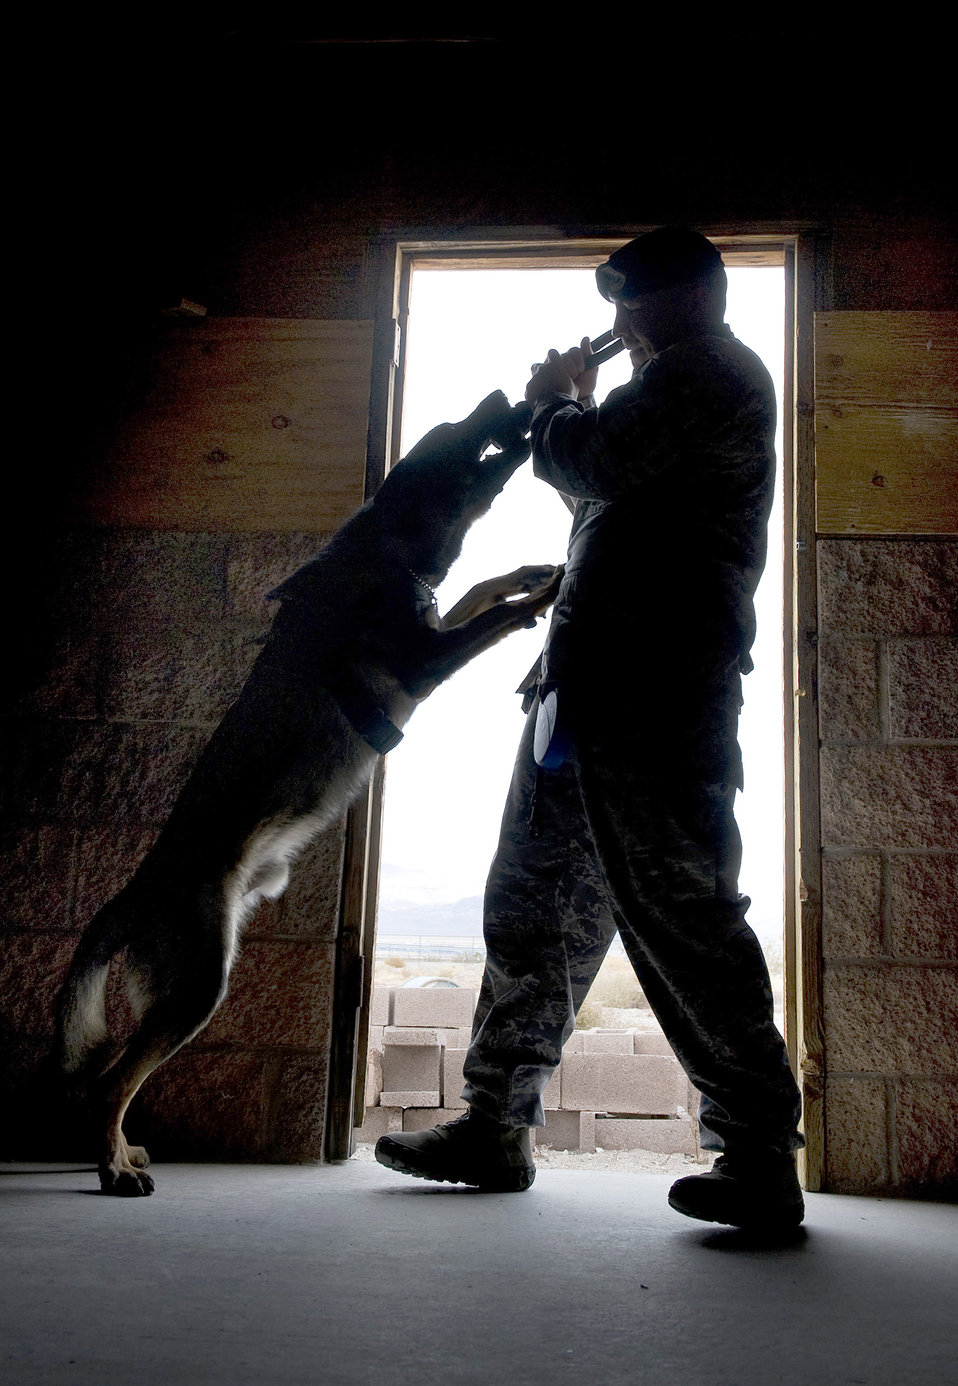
Nellis MWD training

Senior Airman Felipe Alvarado rewards Pike, a MWD, with a chew toy after he discovered explosive ordnance during a joint explosive detection training exercise Dec. 16, 2010, at Nellis Air Force Base, Nev. Military working dog handlers from the 99th Security Forces Squadron worked with 25 canine teams from the Las Vegas area. Airman Alvarado is a 99th Security Forces Squadron MWD handler.